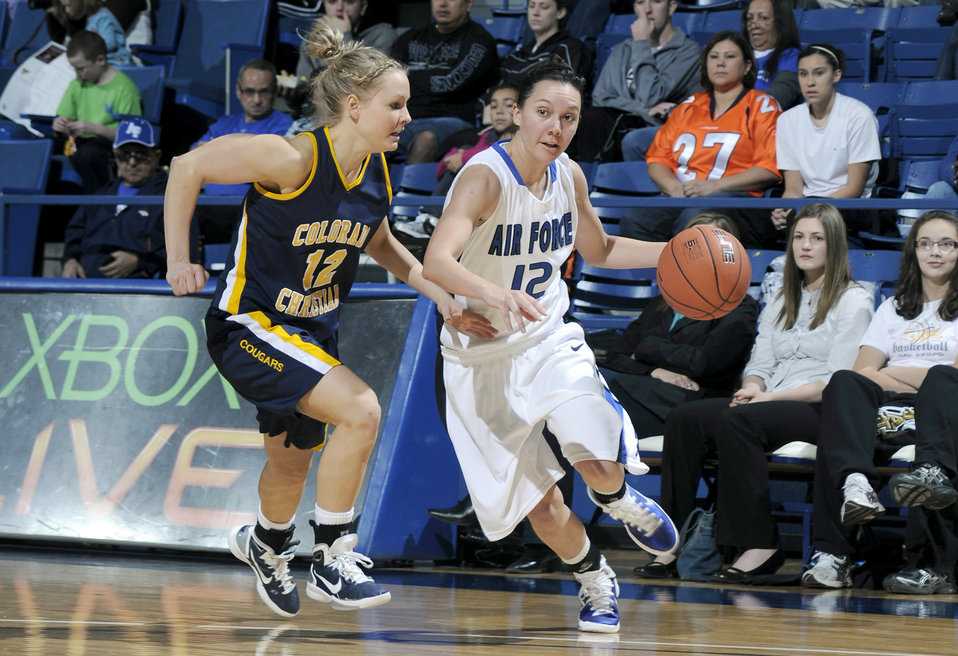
Women's basketball team defeats CCU Lady Cougars

Air Force Academy sophomore guard Kelsey Berger drives around Lady Cougar Jodie Krall as the Falcons defeated Colorado Christian University Nov 28, 2010, at the Air Force Academy's Clune Arena in Colorado Springs, Colo.